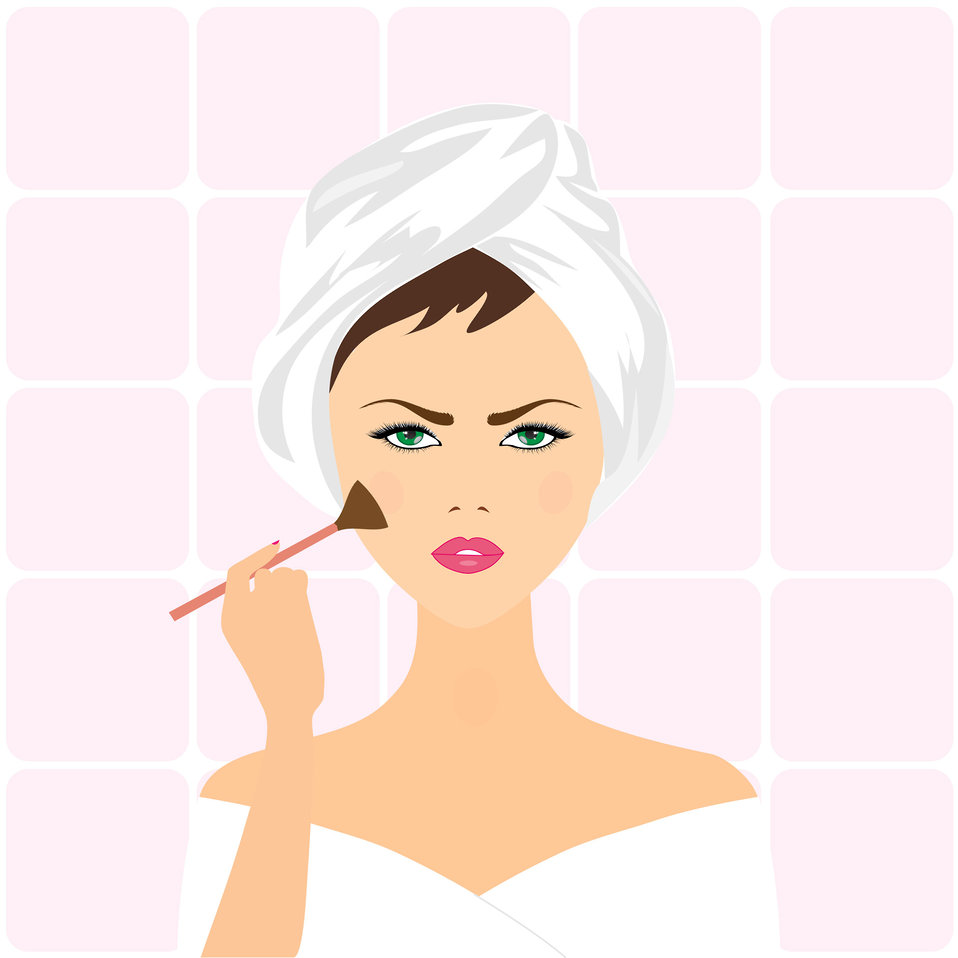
Woman applying make-up

Beautiful woman applying make-up clip-art.